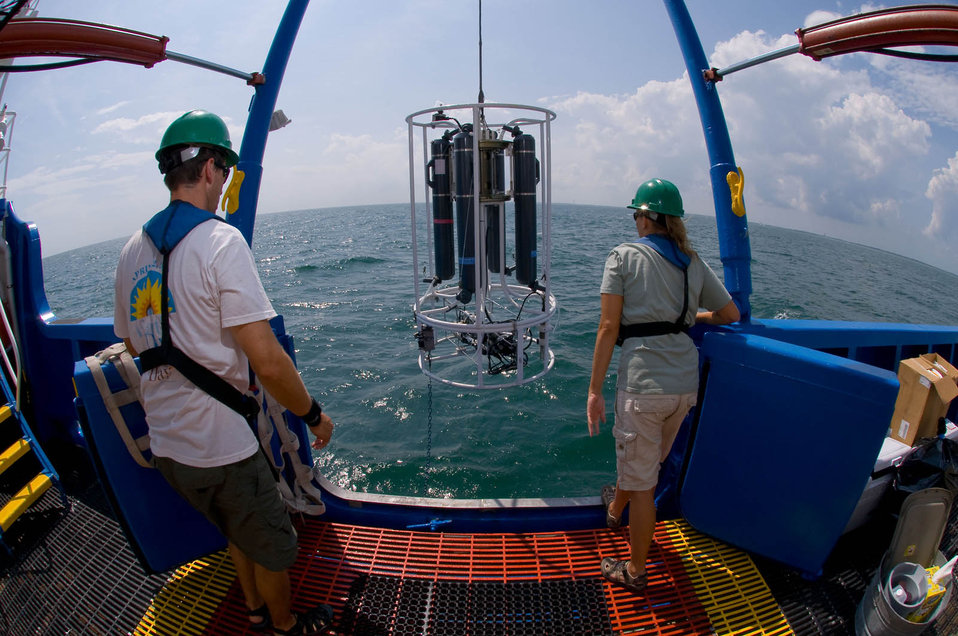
Water sampling

This sensing device called the SeaBird Conductivity, Temperature Depth (CTD)measures the conductivity of water to determine salinity, temperature and depth. Data is sent to a computer lab on the ship and recorded as the device is lowered through water column. Lids on the grey bottles are closed remotely to capture water samples from specific depth for further testing.